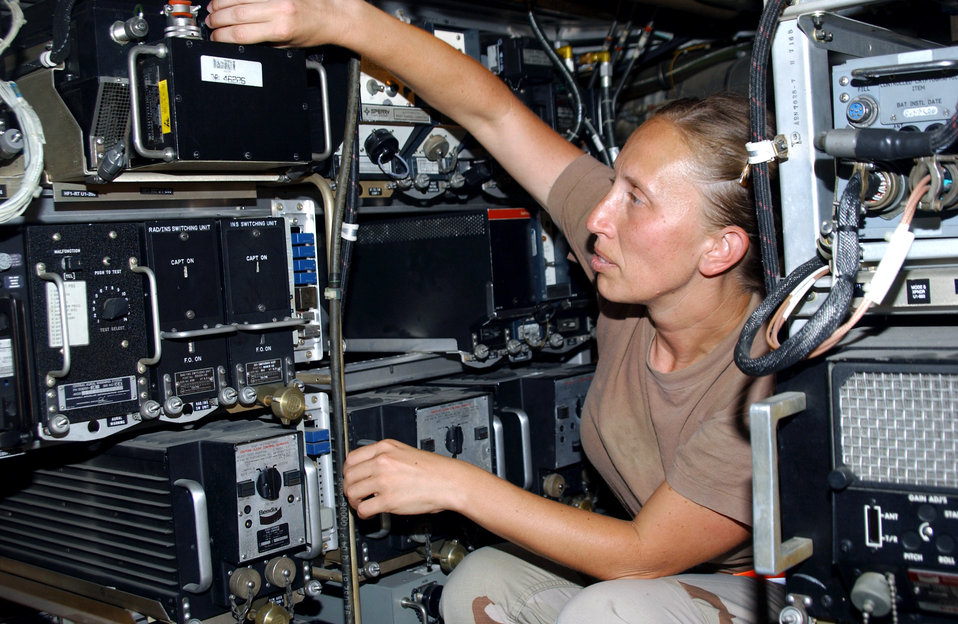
KC-10 maintainers keep mission flowing

Staff Sgt. Nichole Smith ensures the computer system in the avionics bay of a KC-10 Extender is properly working at a deployed location in Southwest Asia on July 30. Sergeant Smith is a guidance and control specialist with the 380th Expeditionary Aircraft Maintenance Squadron.